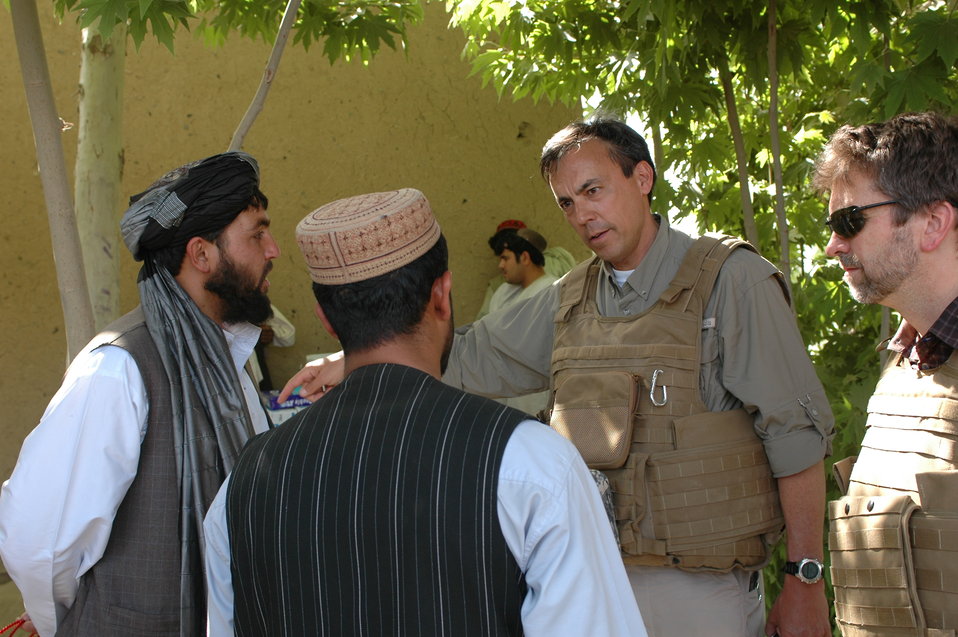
Dr Shah Visits Argandab April 10, 2010